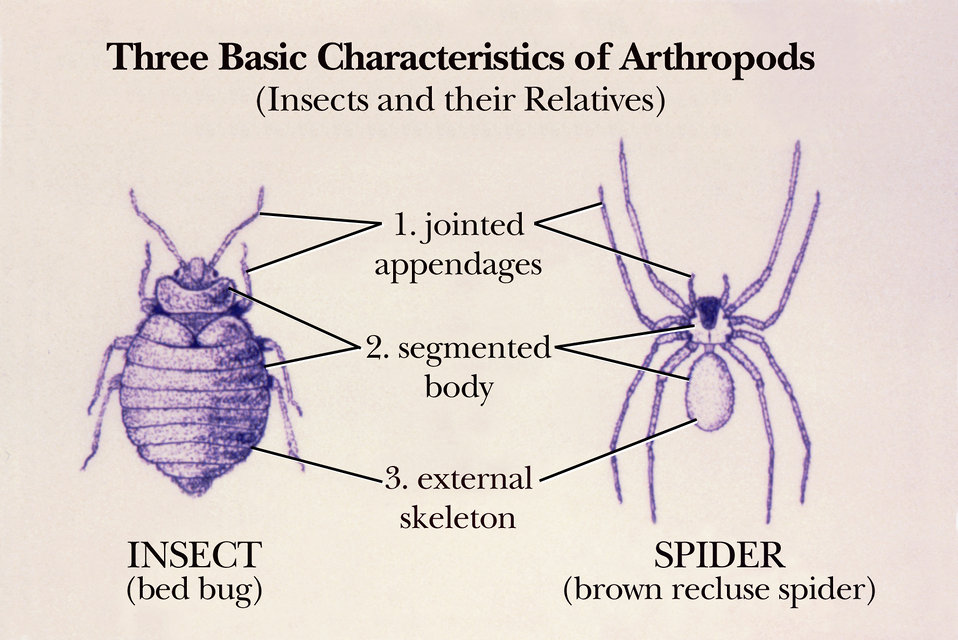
This drawing of a bedbug and a brown recluse spider shows common body characteristics of the Phylum Arthropoda members.